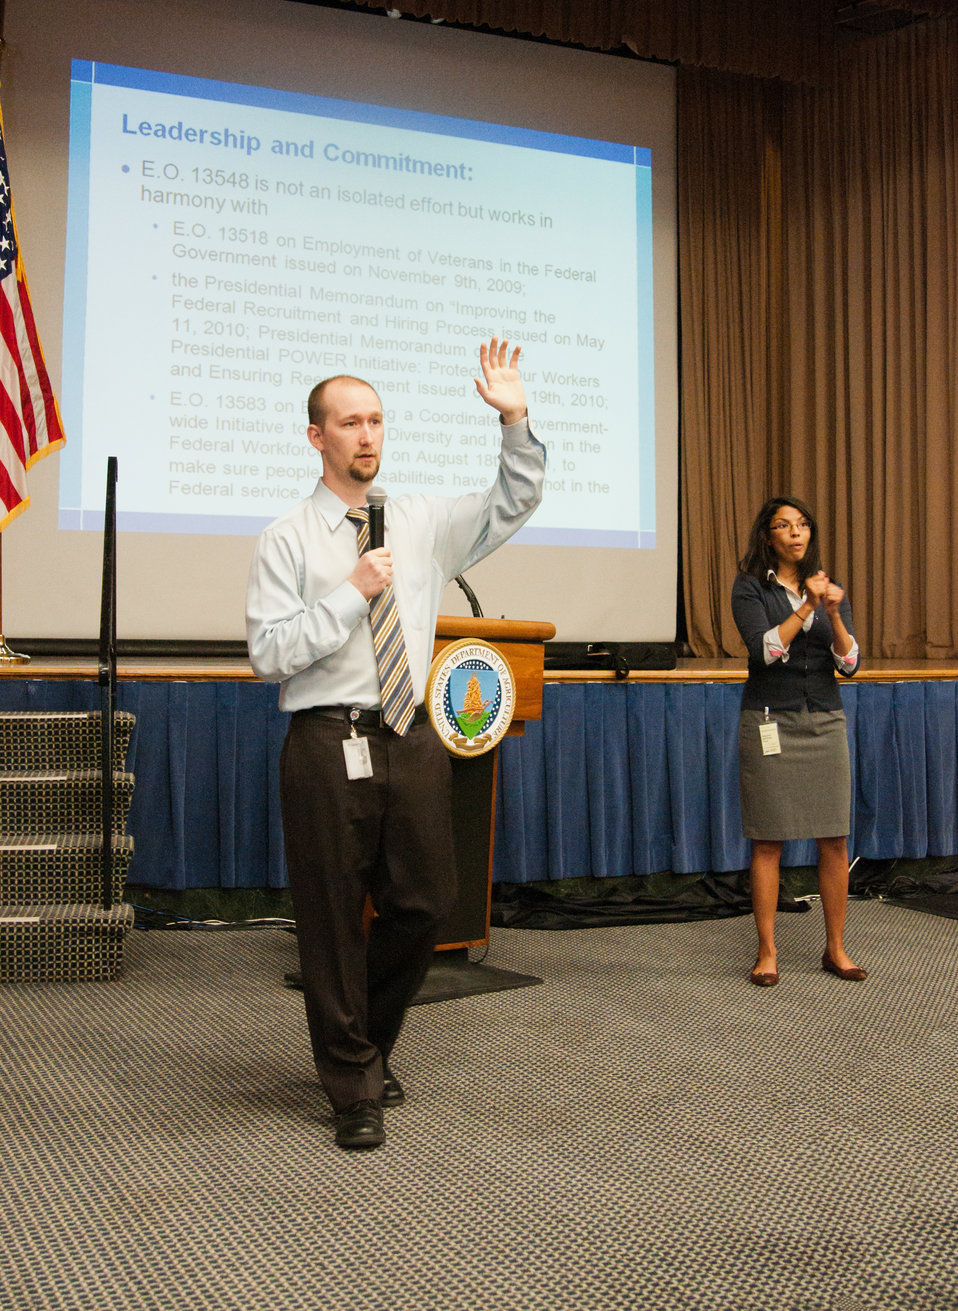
Office of Personnel Management (OPM) Diversity and Inclusion Program Manager Michael Murray discusses diversity and inclusion at the U.S. Department of Agriculture (USDA) Office of Human Resources Management (OHRM) Disability Employment Program Team Training at USDA in Washington, D.C. on Tuesday, May 14, 2013. PINS Unlimited interpreter Susie Needham signs for hearing impaired employees during the event.